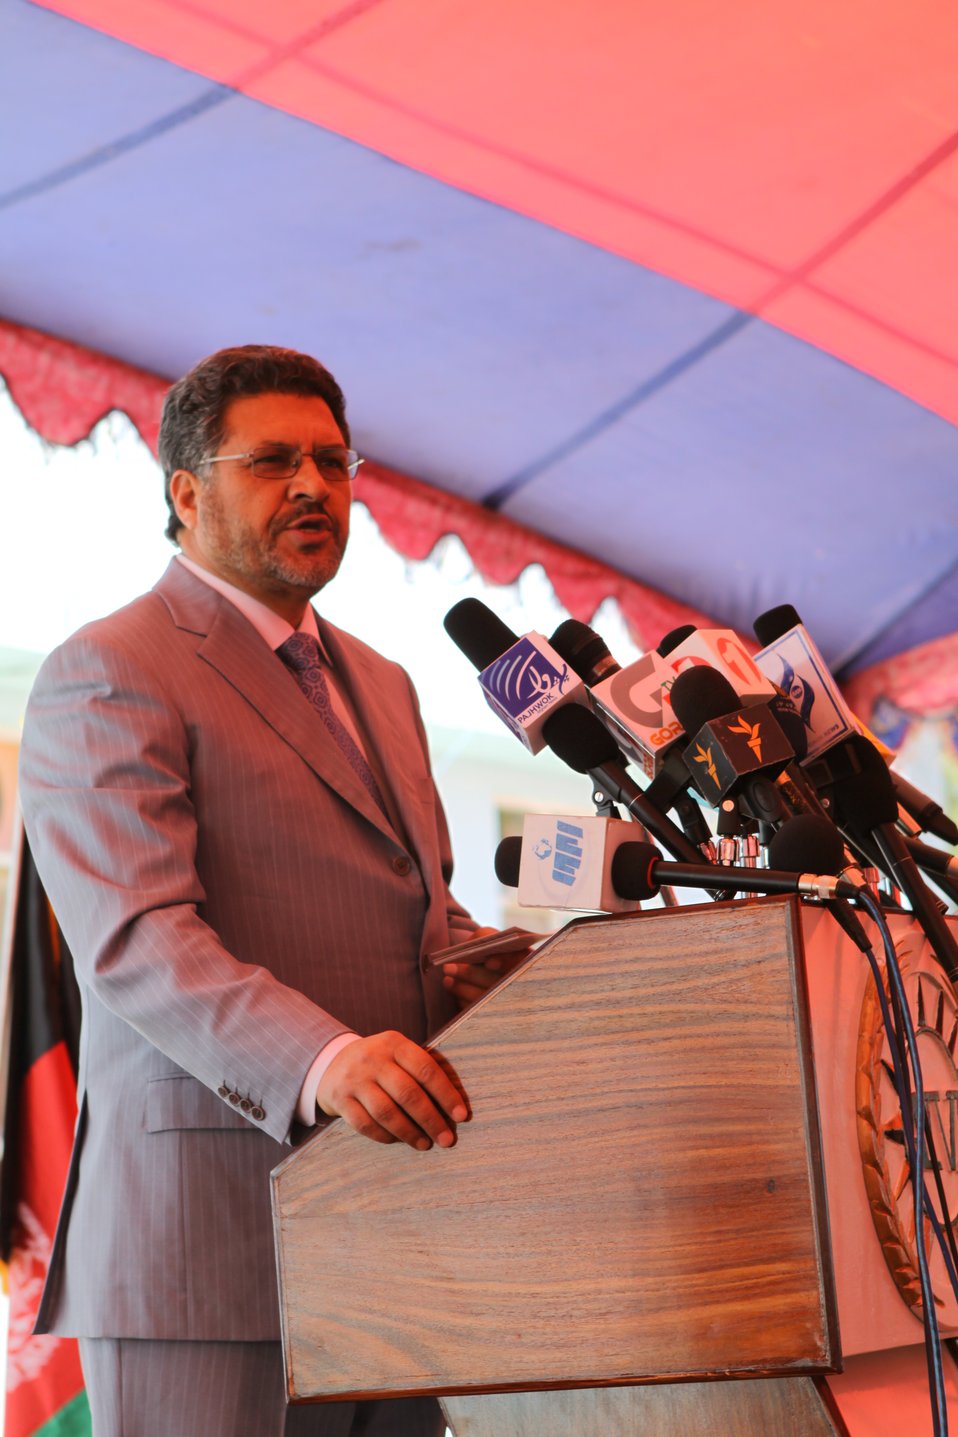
100522 ATVI Graduation 073